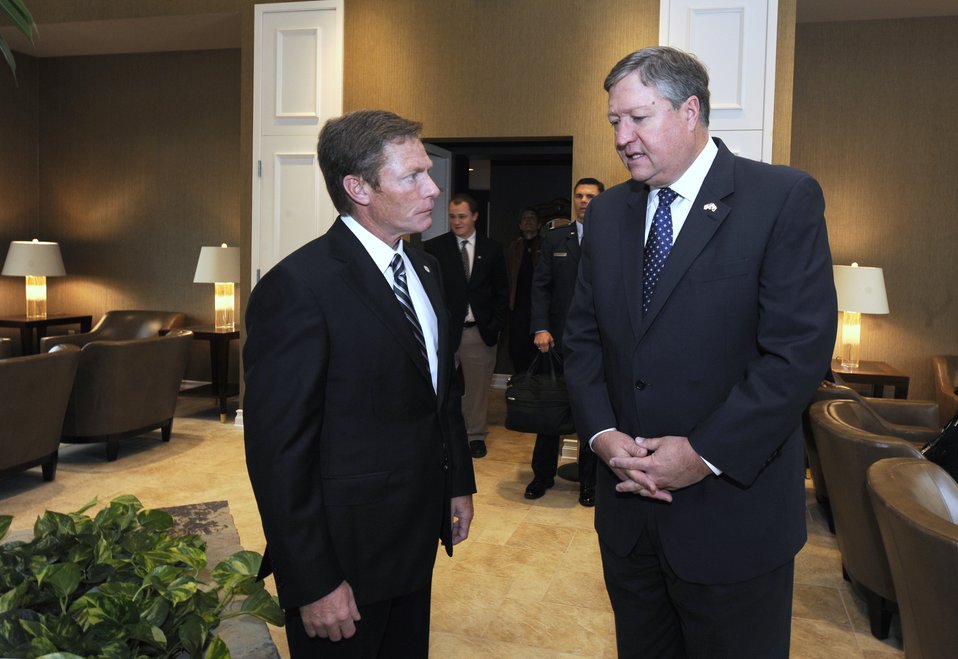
Dover AFB Fisher House Dedication

Kenneth Fisher, Fisher House Foundation chairman, talks with Secretary of the Air Force Michael Donley on Nov. 10, 2010, at Dover Air Force Base, Del., before the Fisher House for Families of the Fallen dedication ceremony. The foundation built the 50th Fisher House at Dover to support families visiting the base for dignified transfers of their loved ones.